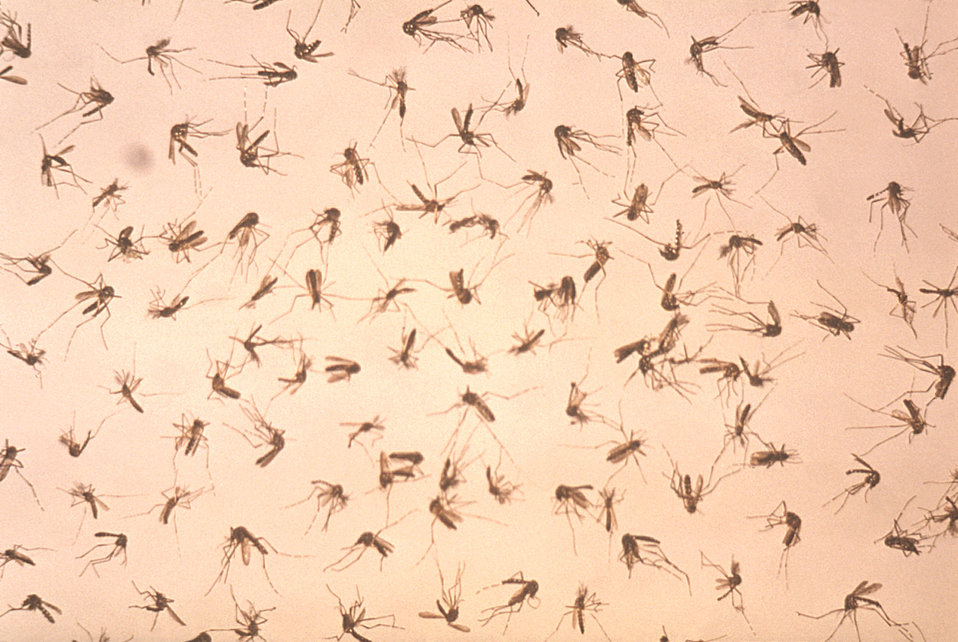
This image depicts a group of dead adult mosquitoes scattered uniformly throught the field of view during a vector control study.